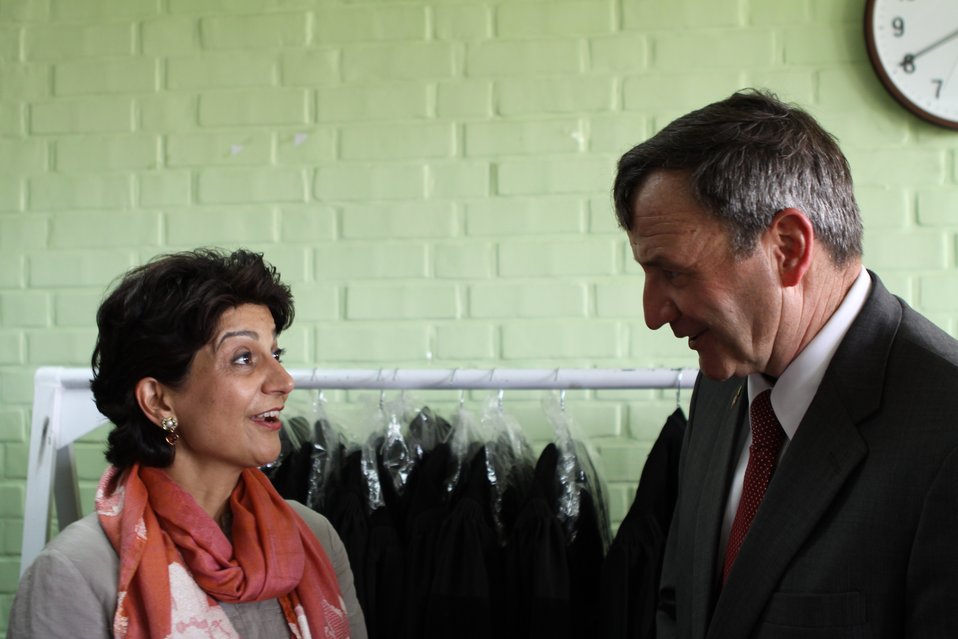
100526 AUAF Graduation 350